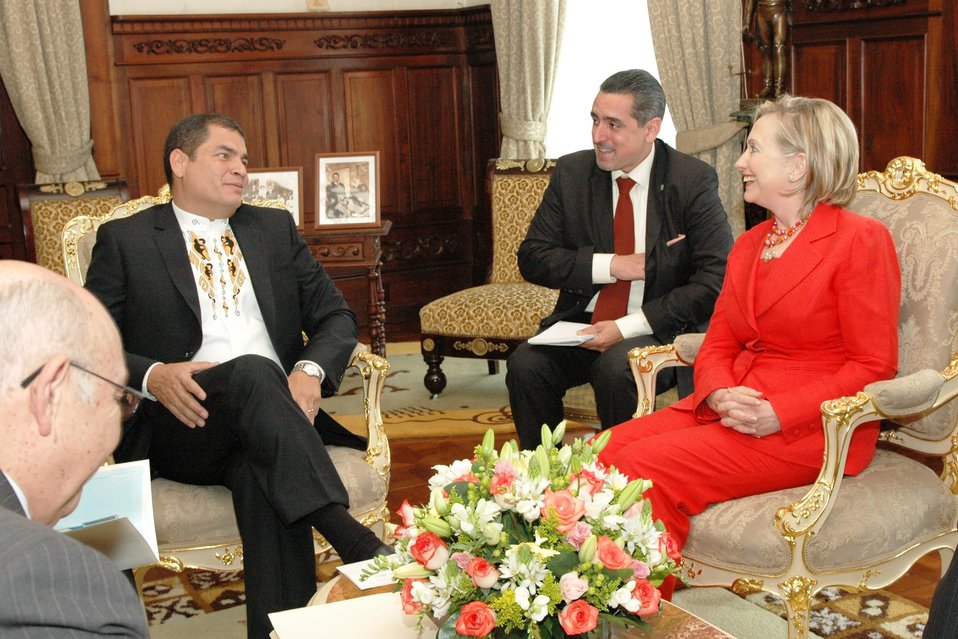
Secretary Clinton Speaks With Ecuadorian President Rafael Correa

Ecuadorian President Rafael Correa speaks with U.S. Secretary of State Hillary Rodham Clinton during their bilateral meeting in Quito, Ecuador, on June 8, 2010.